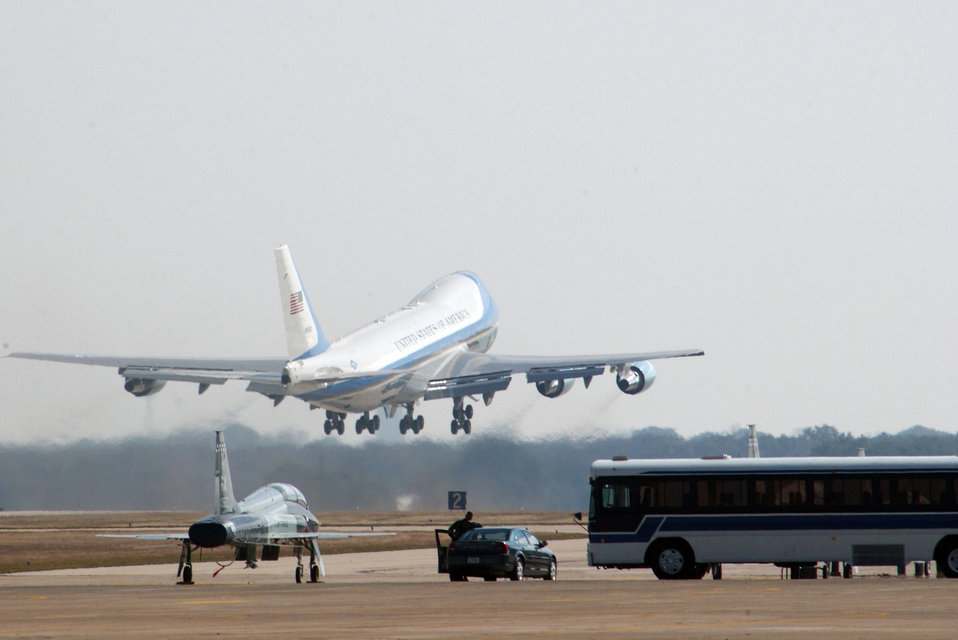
Presidential visit

RANDOLPH AIR FORCE BASE, Texas (AFPN) -- Air Force One takes off from this training base Jan. 1. The president was in San Antonio to visit with injured servicemembers at Brooke Army Medical Center. He also presented some of the troops Purple Heart Medals.